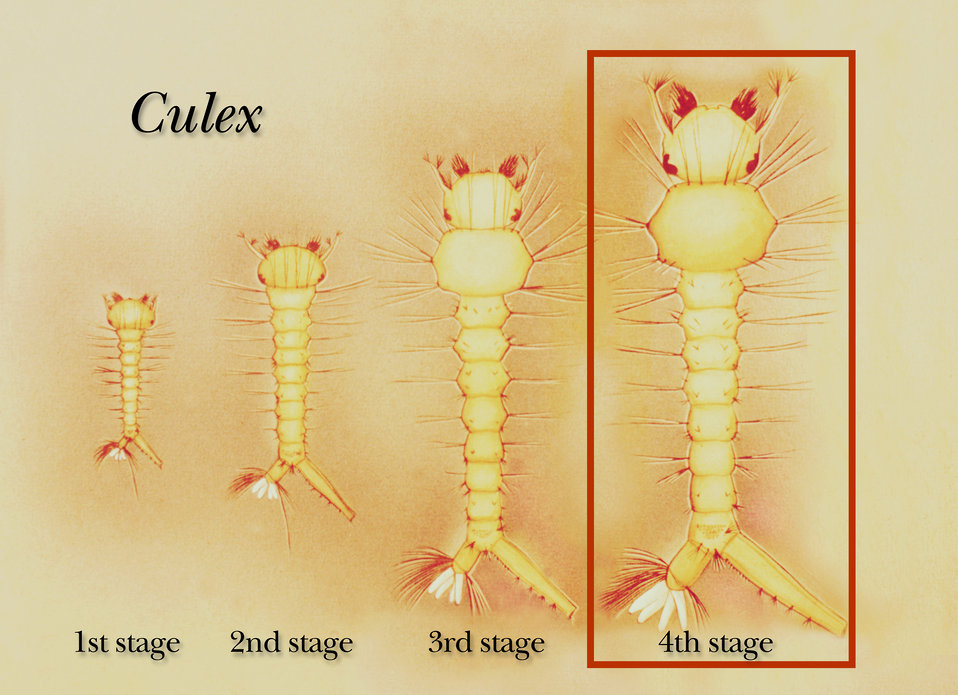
Illustration of the first, second, third and fourth growth stages of a Culex mosquito larva.